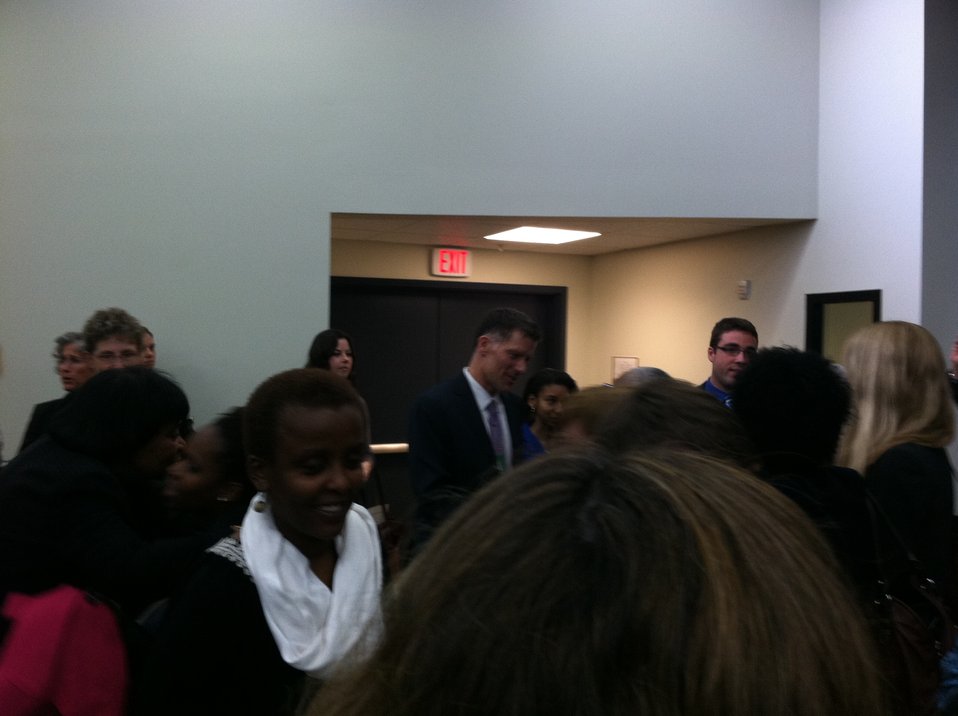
March 14 White House Mtg HIV-Women